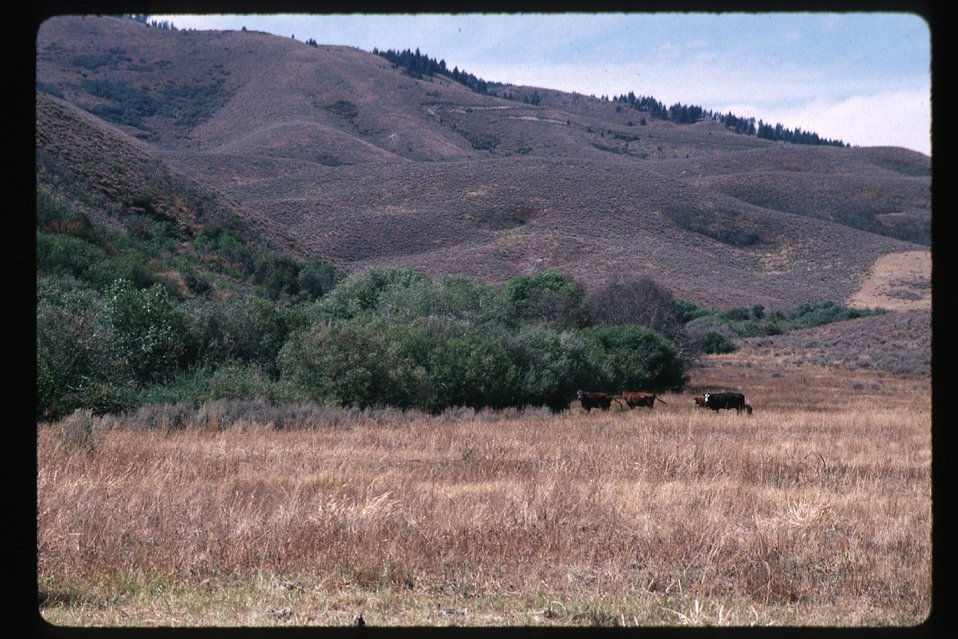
Rangeland Four Rivers Field Office LSRD Lower Snake River District